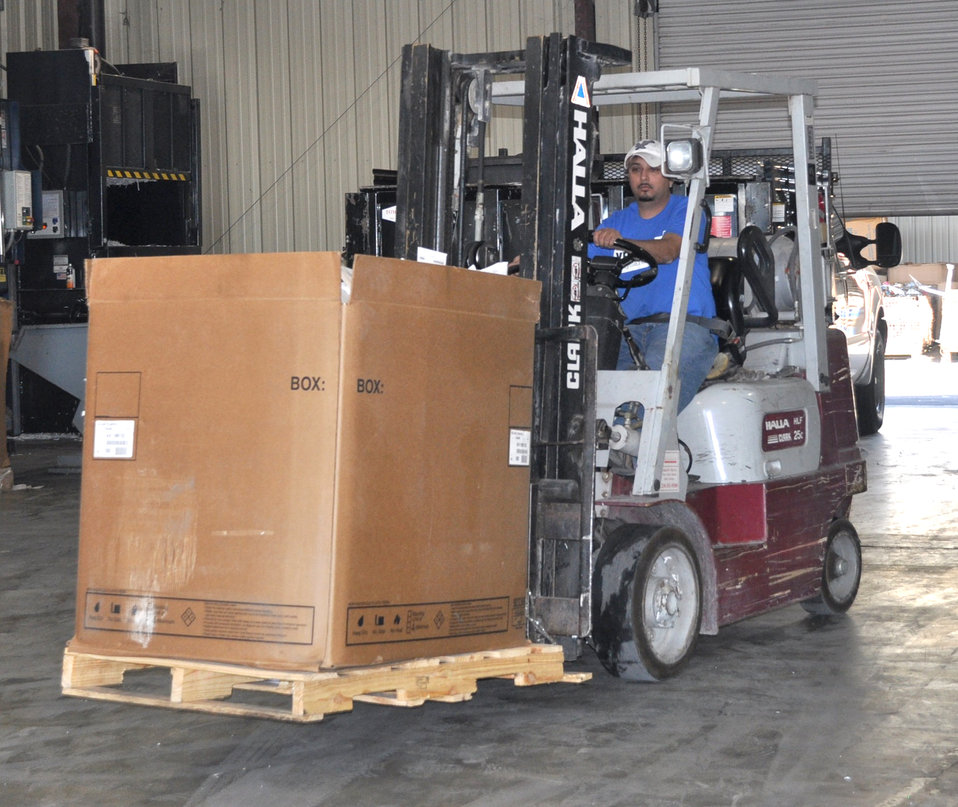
Recycling center

George Ramirez, a recycling center associate at Laughlin Air Force Base, Texas, drives a fork lift with a box of outdated flight manuals and publications. The documents are loaded onto a truck and driven to San Antonio, where they can be processed for recycling.